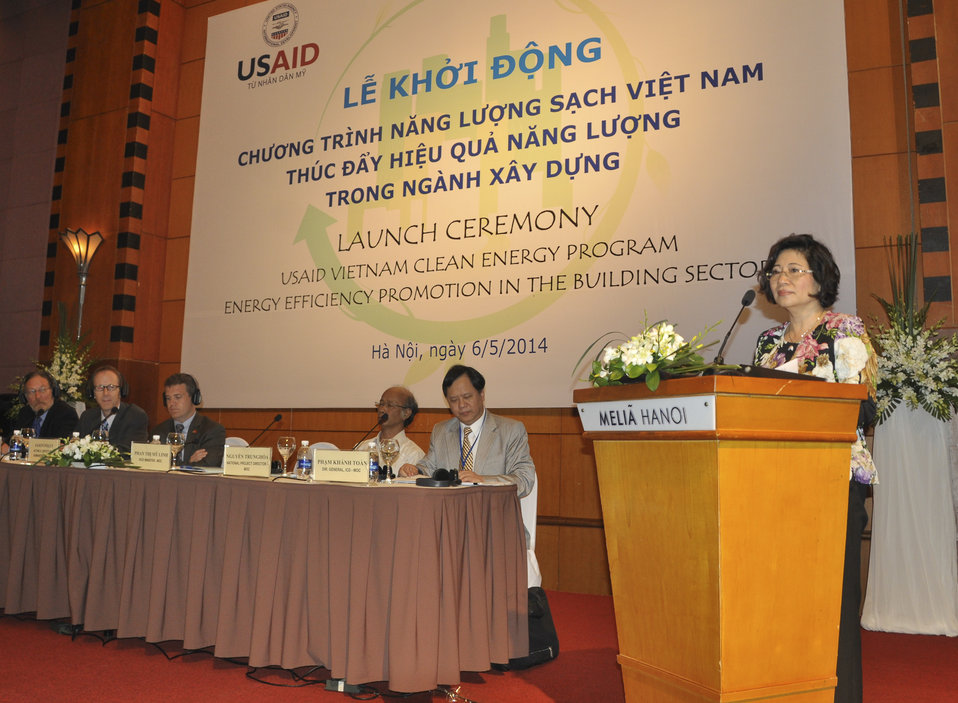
Ms. Phan Thi My Linh, Vice Minister of Vietnam’s Ministry of Construction, speaks at the launching ceremony

Hanoi, May 6, 2014.